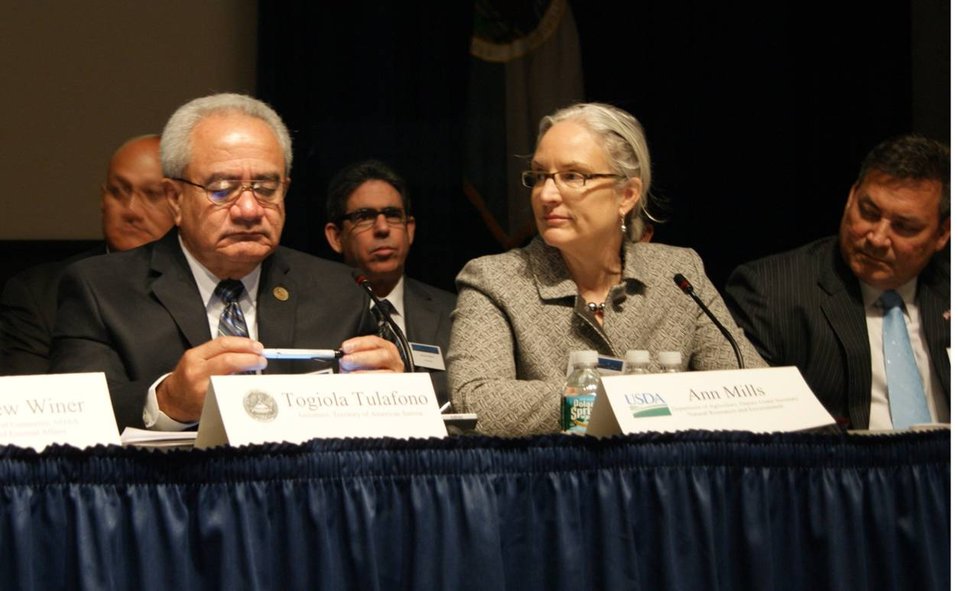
Coral Reef Task Force - Winter Meeting 2012